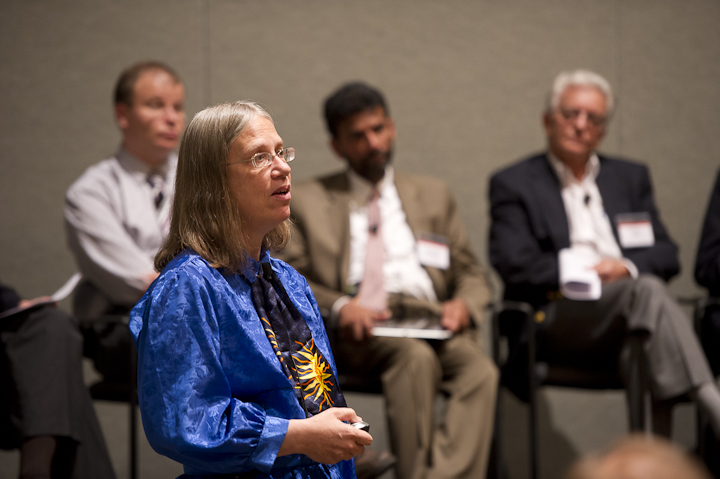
SunShot Sara Kurtz

June 13, 2012- NREL researcher Sara Kurtz speaks at the Concentrating Solar Power break out session at the Technology Forum at the SunShot Grand Challenge Summit and Technology Forum in Denver, Colorado.